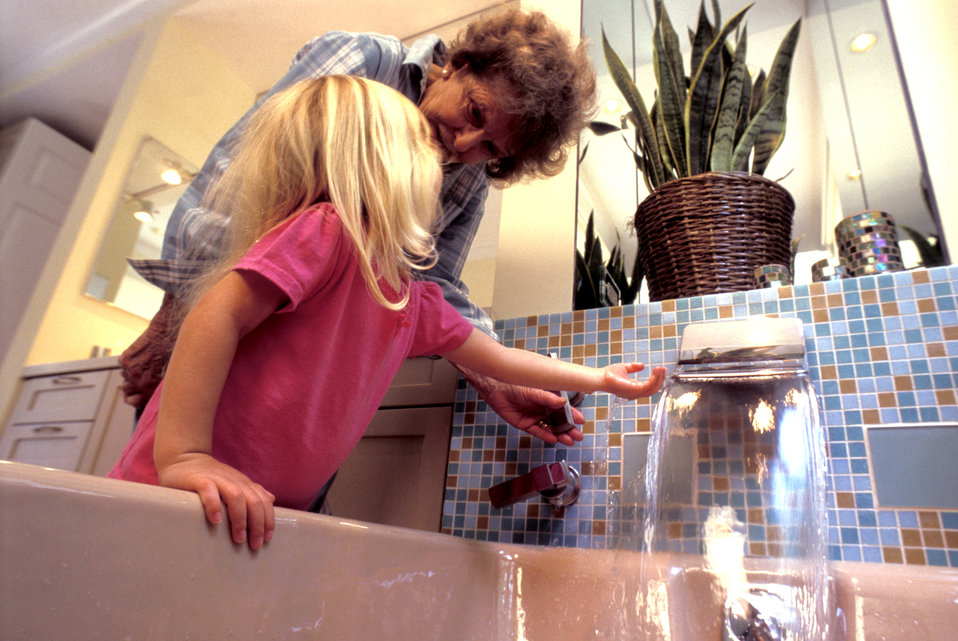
This was one of three images (PHIL# 9192 - 9194), depicting the usage of a bathtub's offset faucets. In this particular image, both a child and an elderly woman were standing next to the tub using the faucet, thereby, adjusting the temperature of the flowing water. Note that the faucet was installed closer to the outside of the tub for easy access. This faucet design enabled everyone to reach it more easily, including users who were standing, children, and the mobility-challenged, who were limited in their ability to bend and reach.